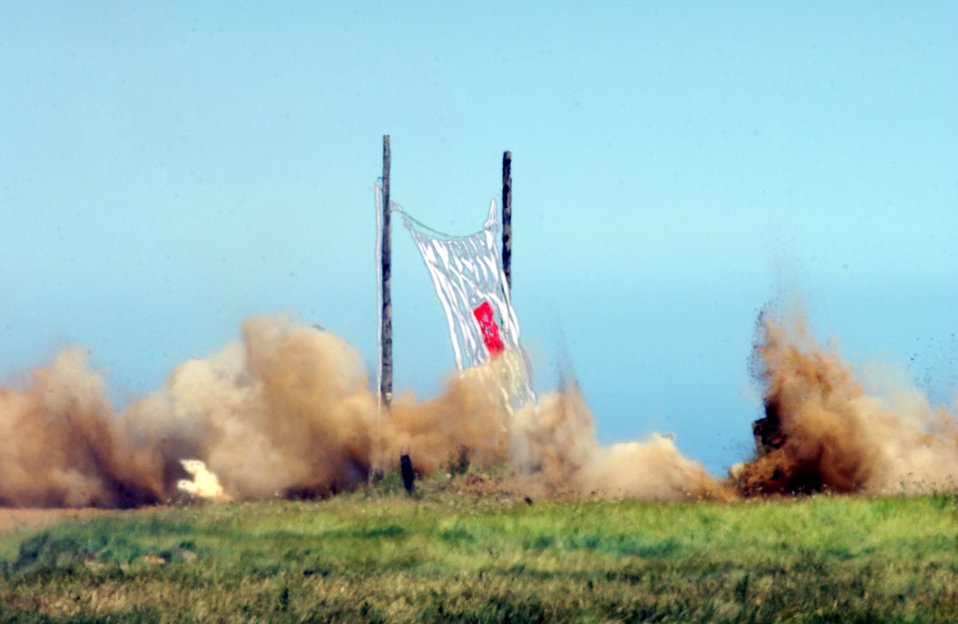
NATO, USAFE vie during Excalibur bombing competition

ROYAL AIR FORCE LAKENHEATH, England -- A strafing target is hit by an F-15E Strike Eagle from the 492nd Fighter Squadron during the Excalibur exercise here Aug. 16. The Excalibur bombing competition was established to foster friendly relations between U.S. Air Forces in Europe and NATO, to increase esprit de corps among pilots and to show basic visual bombing skills.